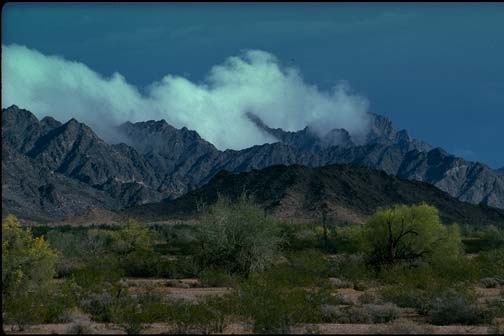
Low clouds on the Mohawk Mountains from Interstate 8 looking south.